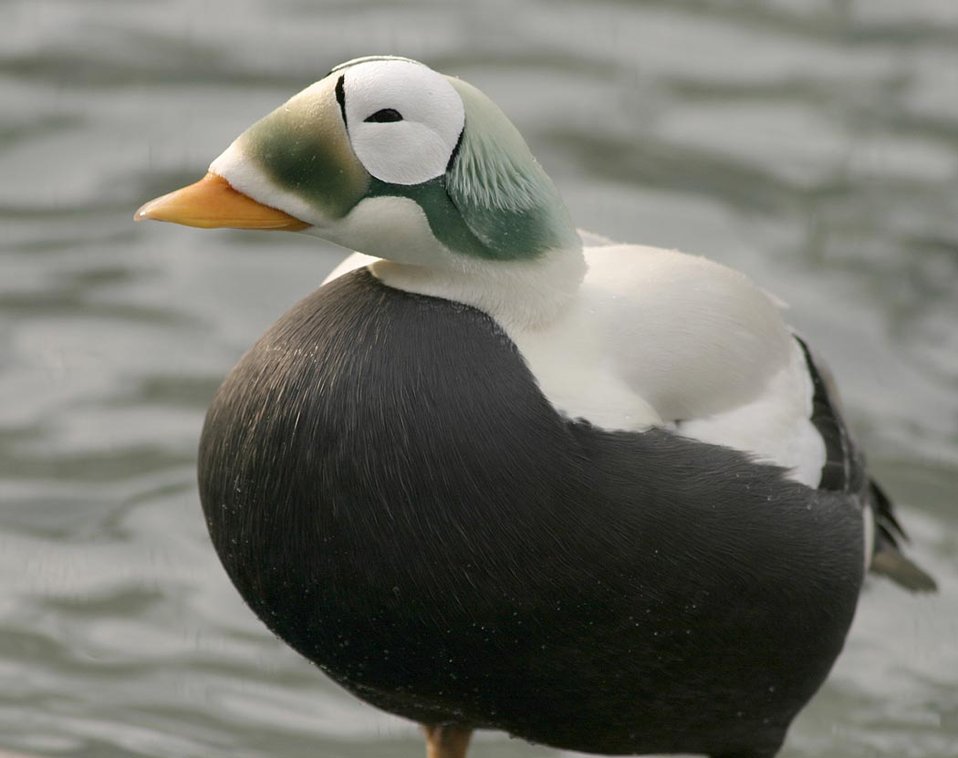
Threatened spectacled eider male (Somateria fischeri), Alaska SeaLife Center, Seward, Alaska